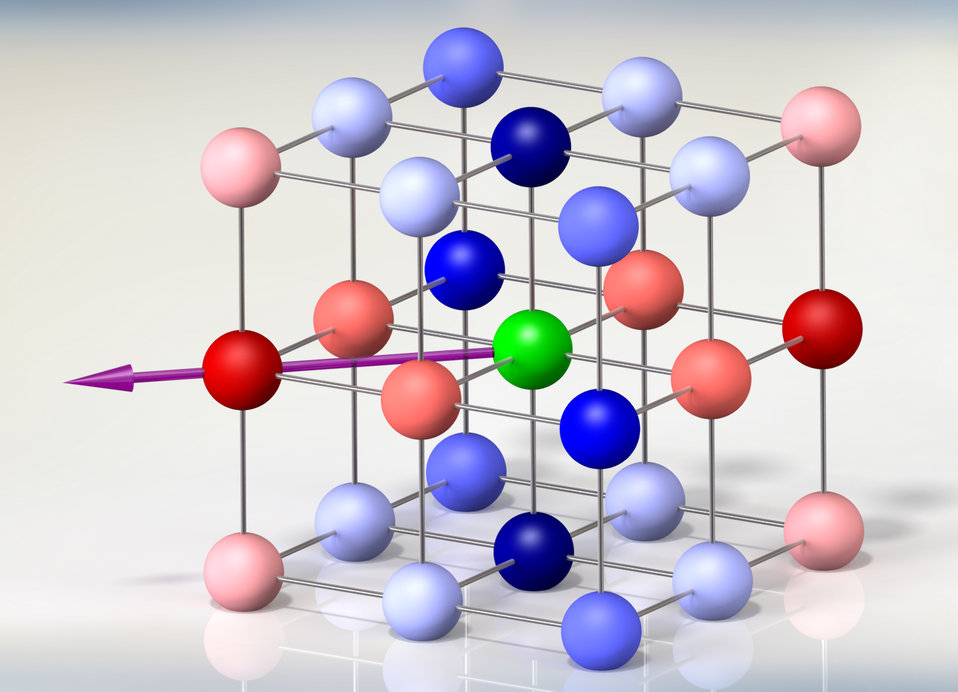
Illustration of the interaction energies between ultracold potassium-rubidium molecules trapped in a lattice made of intersecting laser beams. The colors indicate each molecule's interaction with the molecule located in the center of the lattice (green), for a specific magnetic-field direction (purple arrow). Blue indicates attractive interactions, and red indicates repulsive interactions. Darker colors indicate higher interaction energy.